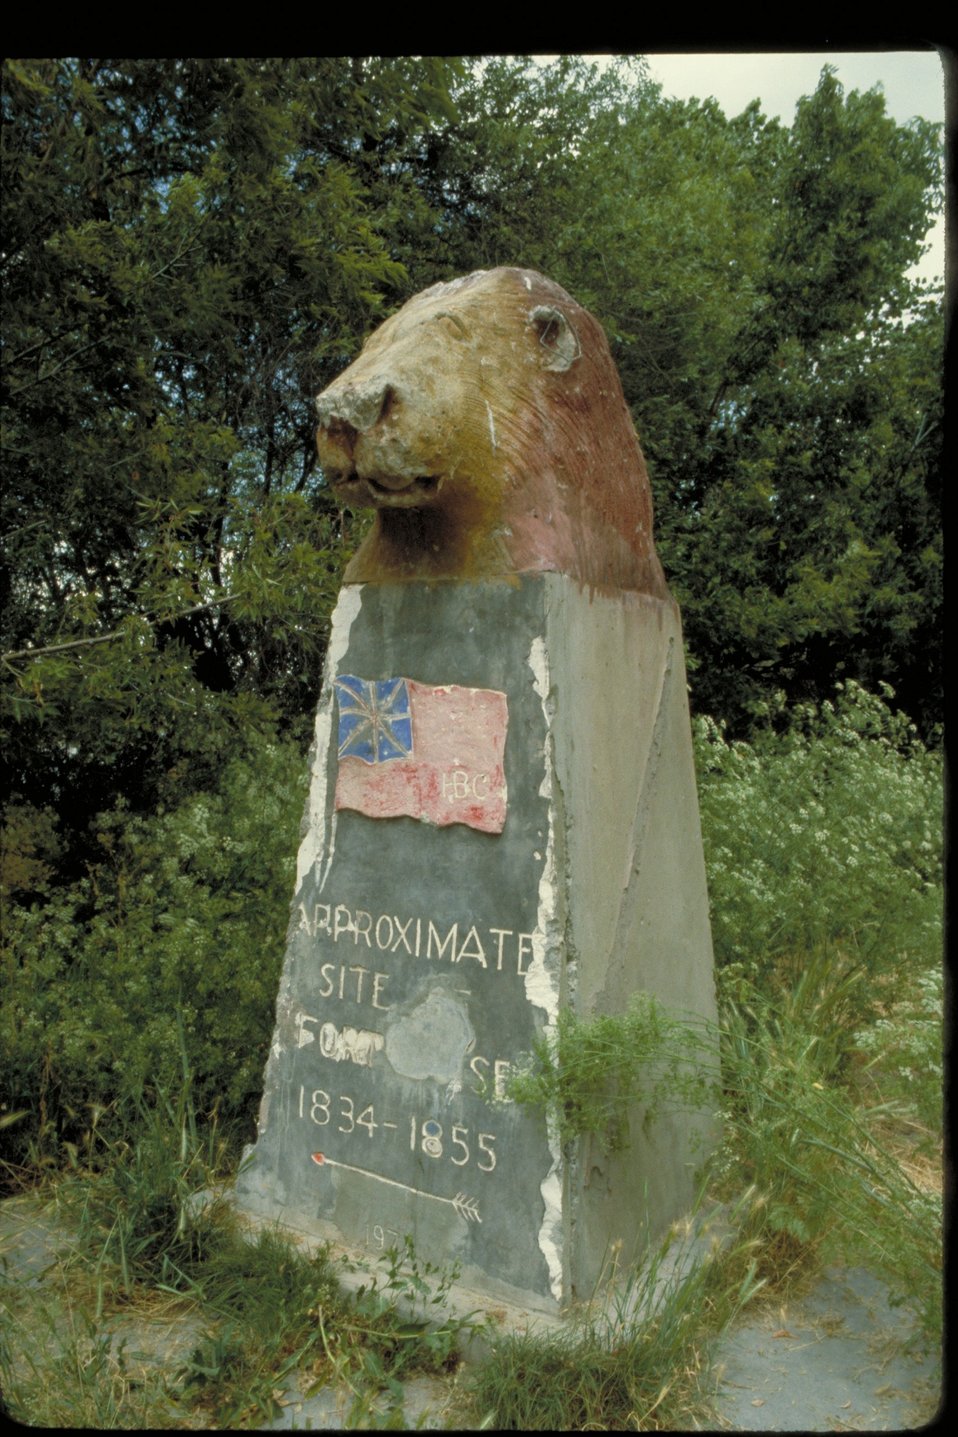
Fort Boise Oregon Trail Lower Snake River District